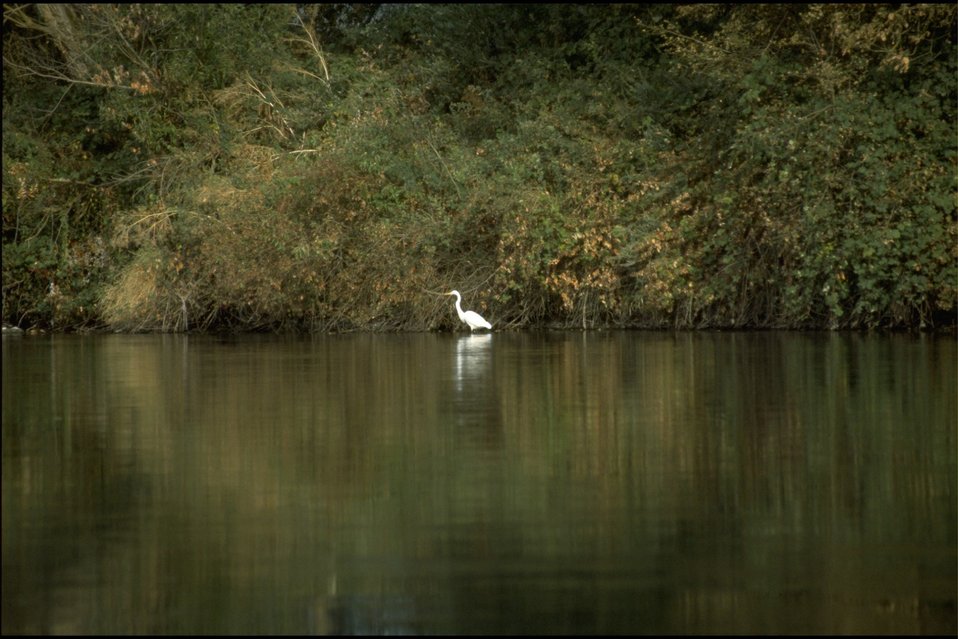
Rogue River - Hellgate Recreation Area, Egret.